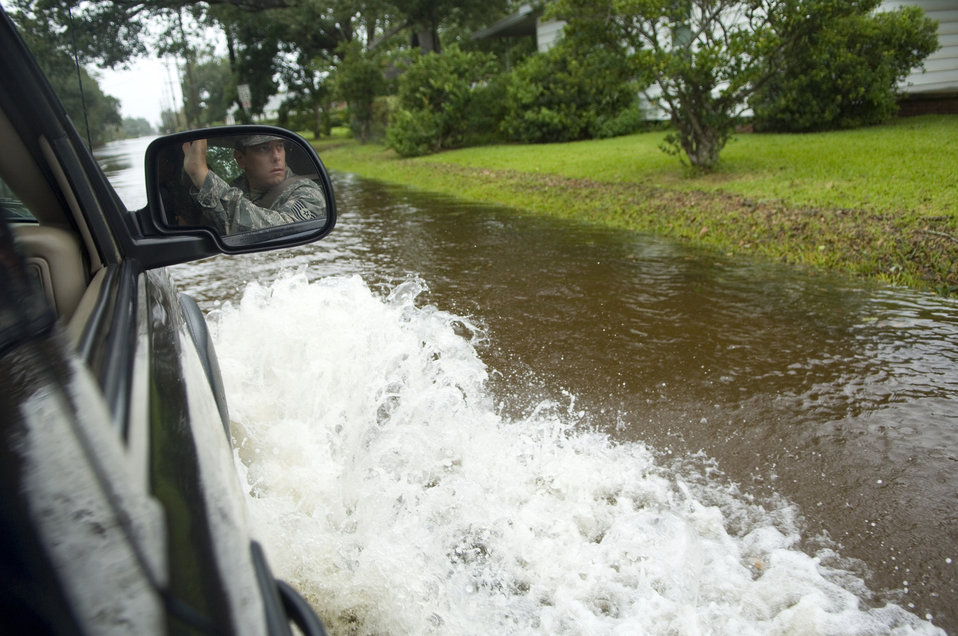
Watchful Eye

Tech. Sgt. Steve German an Air Force News broadcast journalist surveys flood damage caused by Hurricane Ike Sept. 13. in Lake Charles, La., in order to transmit the news to the Pentagon Television News Channel.